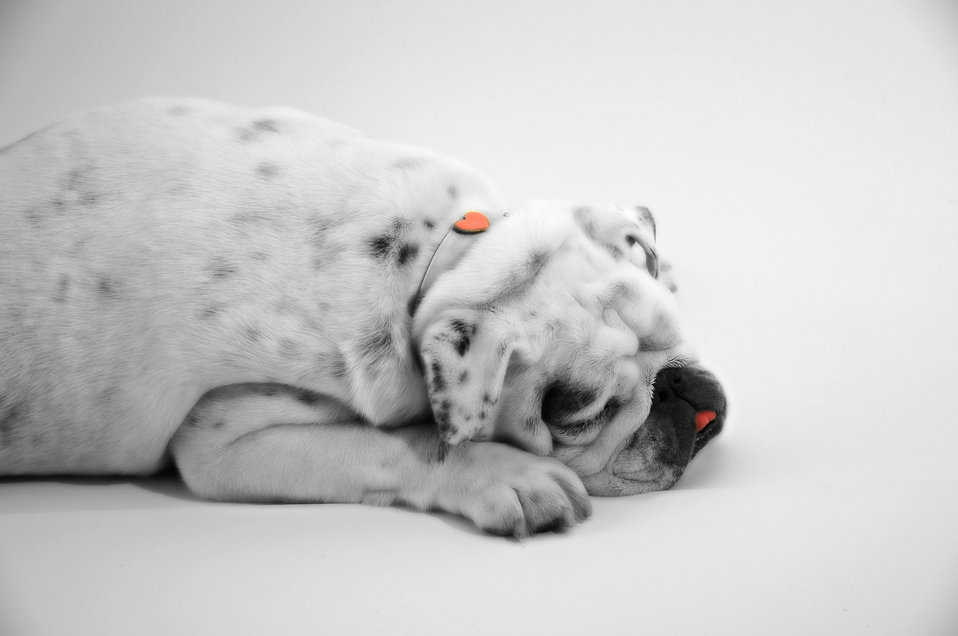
Mia

White bulldog.